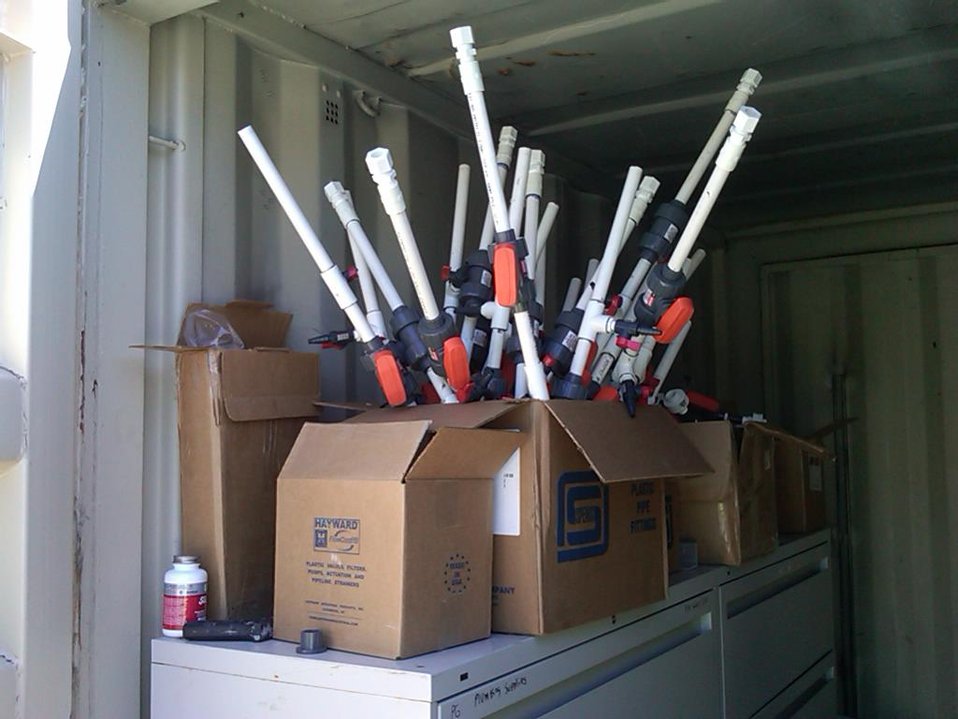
Recovery Act Supports Soil and Debris Cleanup, Groundwater Treatment at SLAC

Recovery Act workers are on track to remove more than 30,000 cubic yards of contaminated soil and debris at the SLAC National Accelerator Laboratory by September 2011.
The Recovery Act invested $14.3 million in legacy cleanup activities at SLAC. In addition to removing contaminated soil and debris that is shipped to local disposal facilities, Recovery Act workers installed three new groundwater treatment systems.